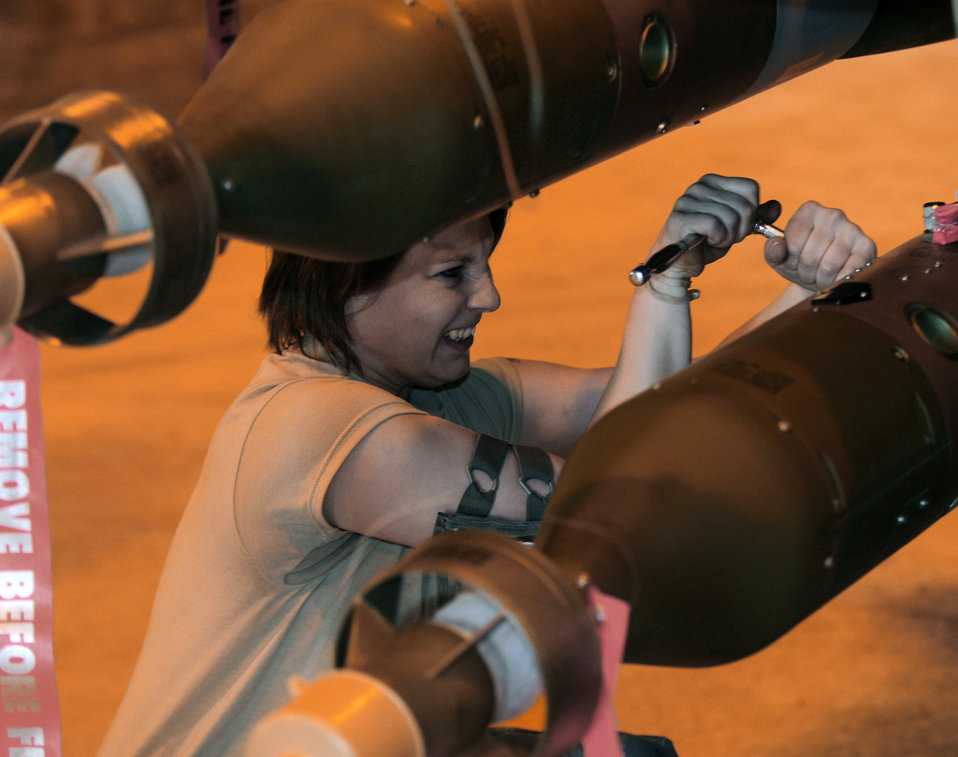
Odyssey Dawn

Airman 1st Class Katelynn Michalko, 510th Aircraft Maintenance Unit weapons load crew member, ensures an ordinance is secure on an F-16 Fighting Falcon March 21, 2011, at Aviano Air Base, Italy. The aircraft will deploy in support of Operation Odyssey Dawn. Joint Task Force Odyssey Dawn is the U.S. Africa Command task force established to support the larger international response to the unrest in Libya. A broad coalition of nations are partnering to enforce U.N. Security Council Resolution (UNSCR) 1973, which authorizes all necessary means to protect civilians in Libya under threat of attack by Qadhafi regime forces. JTF Odyssey Dawn is commanded by Admiral Samuel J. Locklear, III.